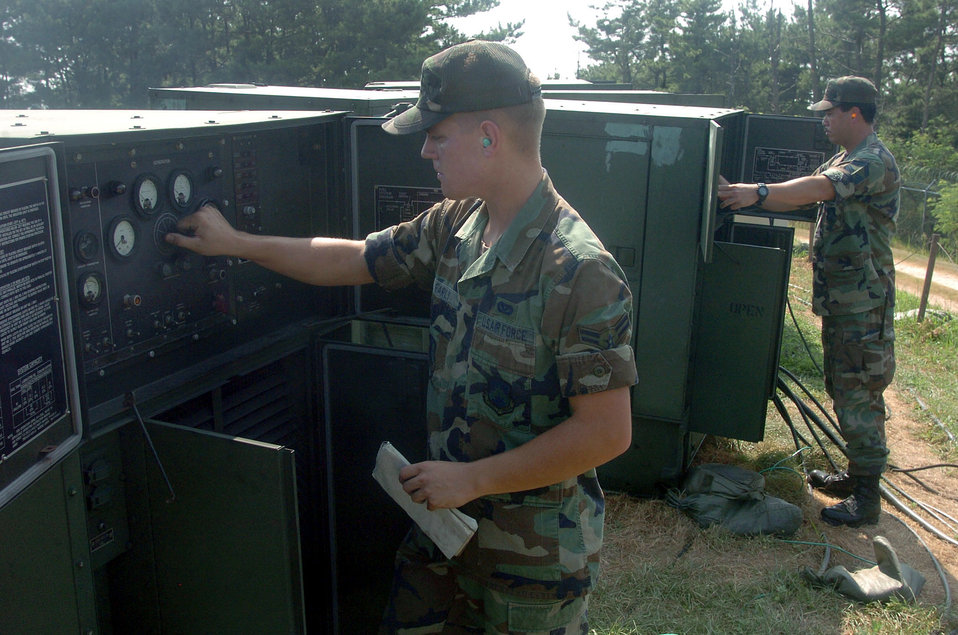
CE benefits from Nighthawk deployment

KUNSAN AIR BASE, South Korea -- Airman 1st Class David Early (foreground) and Senior Master Sgt. Manny Lapuz inspect a row of generators at tent city here. They are assigned to the 8th Civil Engineer Squadron. Civil engineers are providing a home for about 300 Airmen who are deployed here from the 49th Fighter Wing at Holloman Air Force Base, N.M.